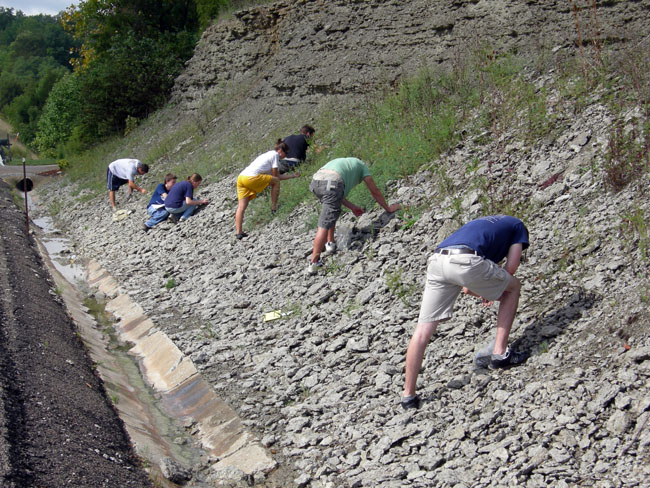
College of Wooster students collecting fossils; Ordovician of Indiana.